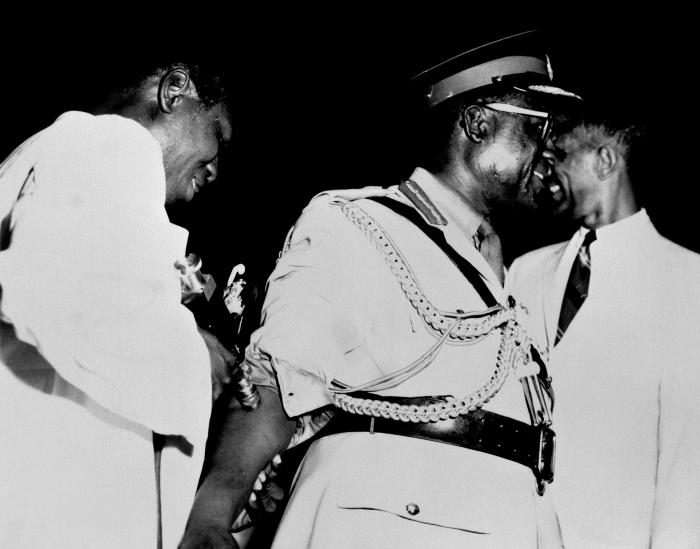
This historic image depicted Ghana's former Chief of State, General Ankrah, as he was receiving his smallpox vaccination using a jet injector gun. The photograph was captured during the West African Smallpox Eradication, and Measles Control Program efforts, and while the General was at the International Trade Fair, held in Accra, Ghana, on February, 1967.